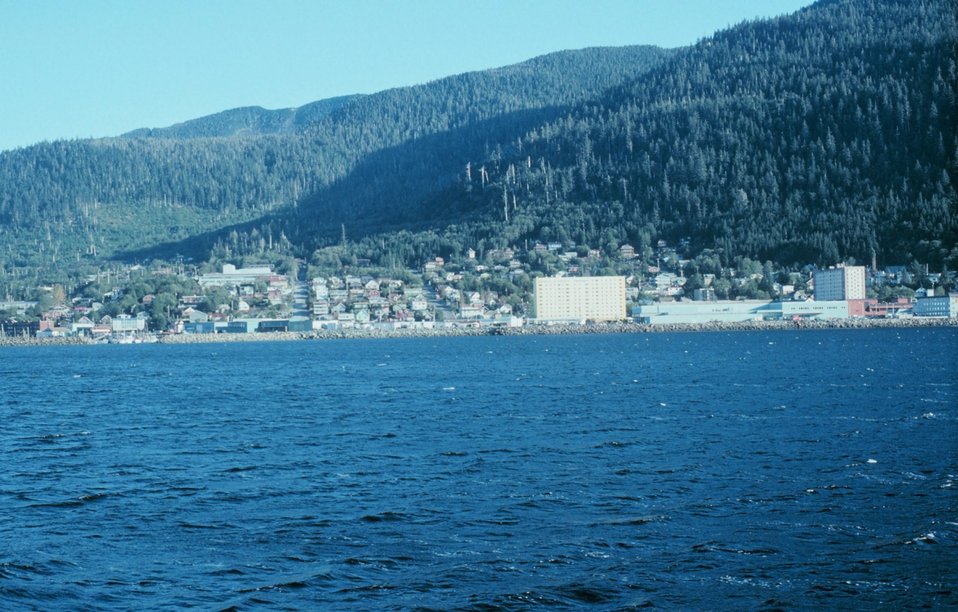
Ketchikan